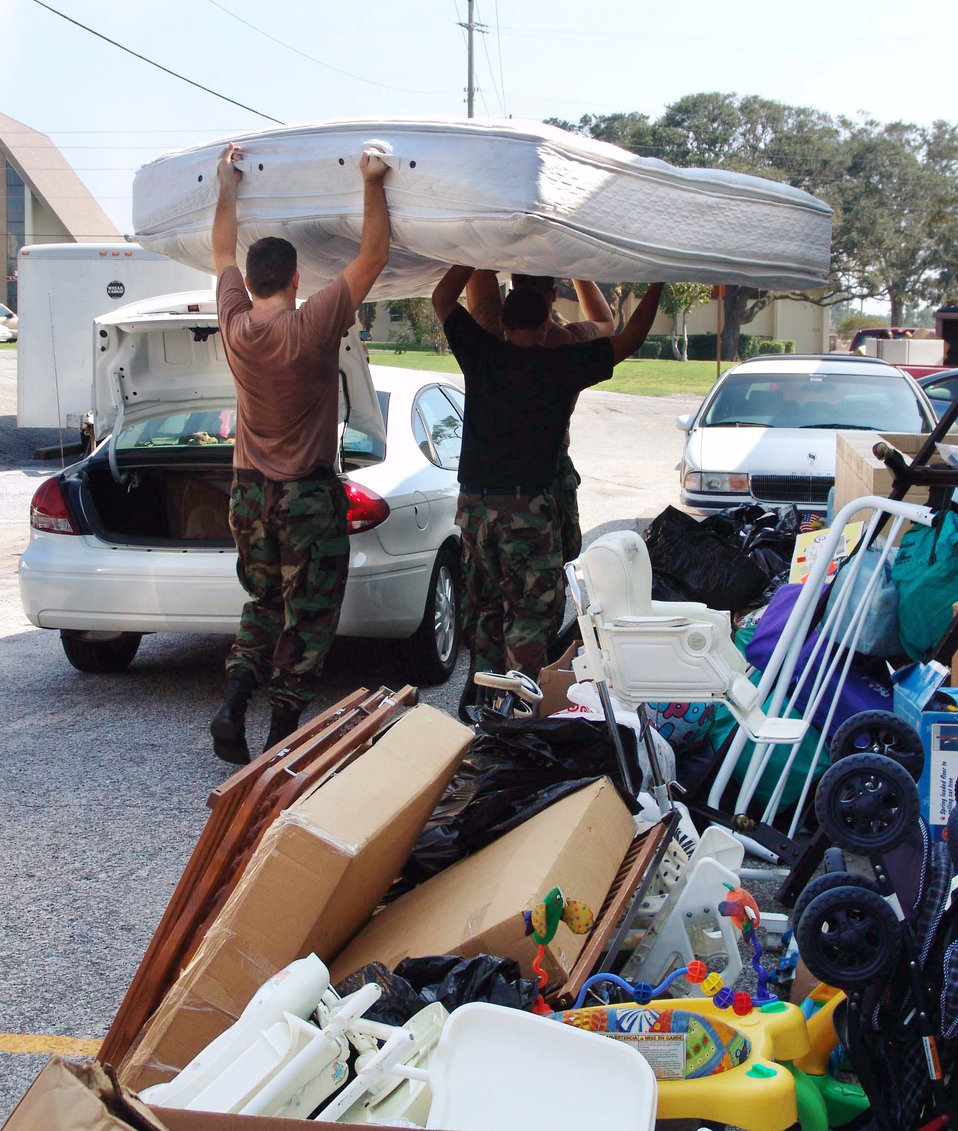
Airman's Attic

EGLIN AIR FORCE BASE, Fla. -- Volunteers unload donated items at the Airman's Attic here. People brought clothes, furniture, toys and household appliances to help military families displaced by Hurricane Katrina and who have lost everything in the wake of the devastating storm.